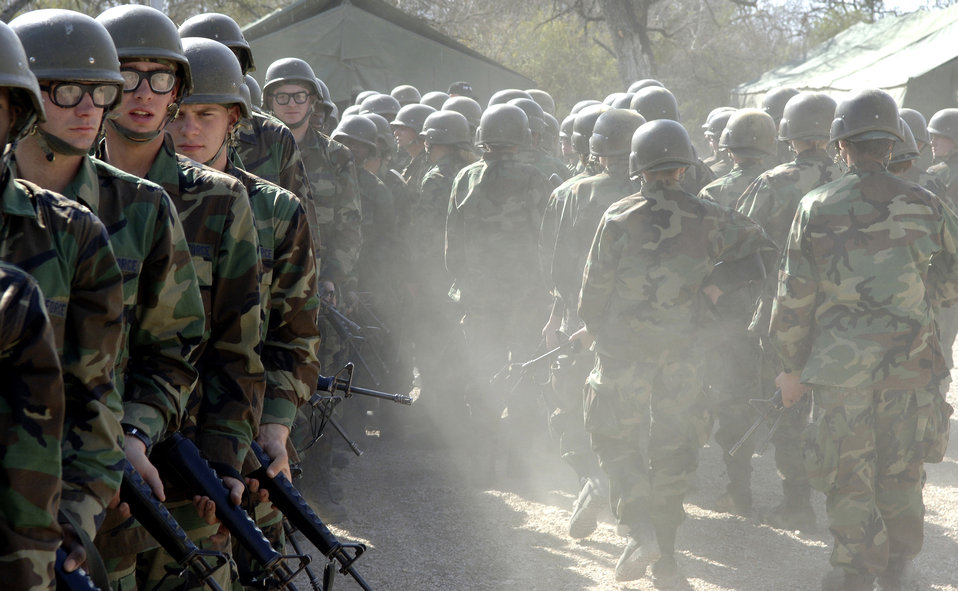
Feeding warriors

LACKLAND AIR FORCE BASE, Texas (AFPN) -- Trainees in the warrior week portion of basic military training stand outside after eating a hot meal prepared by Airmen attending the services apprentice course here. The 31-day course consists of teaching all facets of the services technical trade.